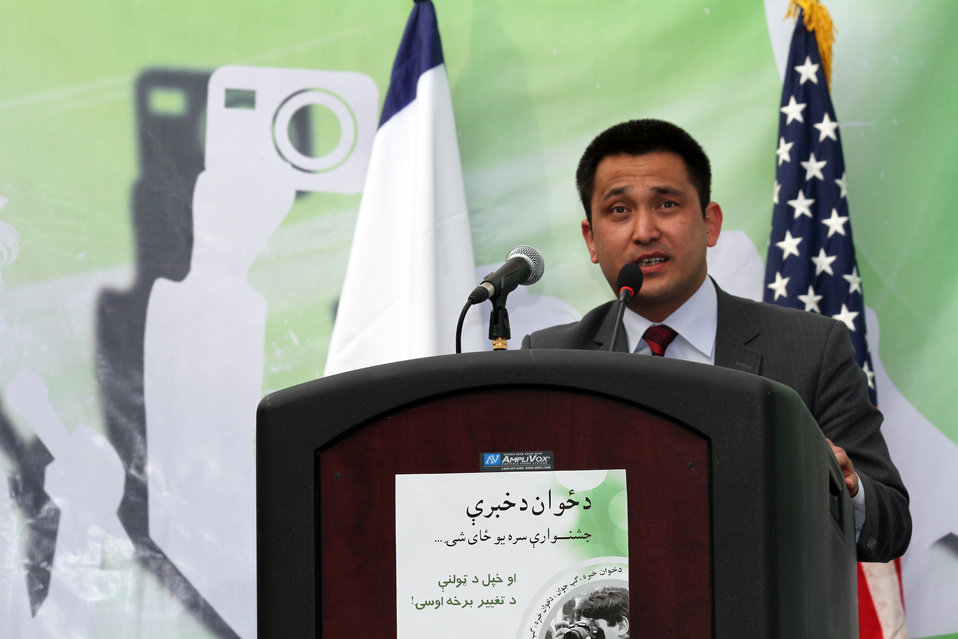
Afghan Youth Festival

Internews - USAID